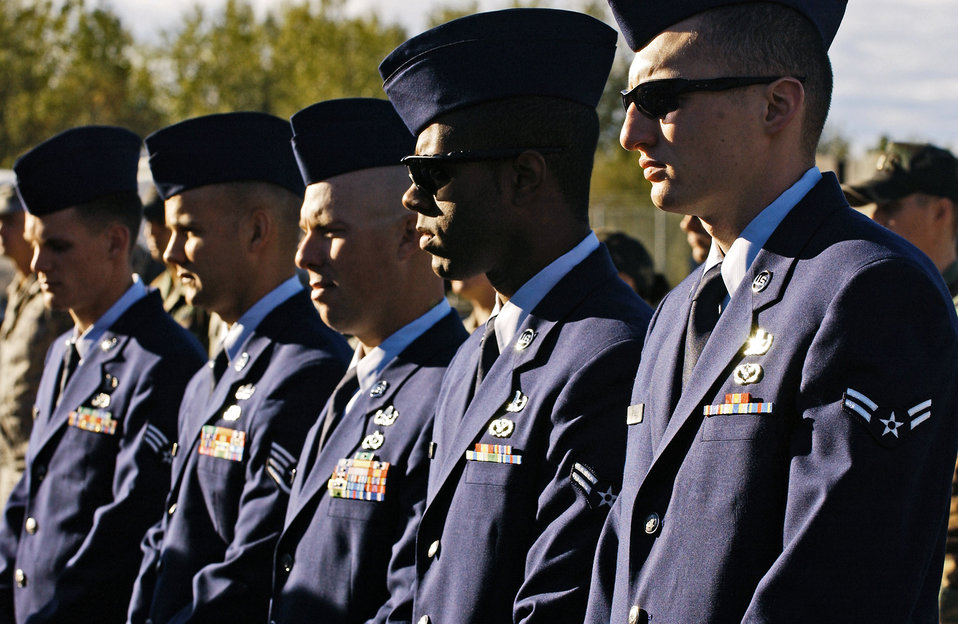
Fallen EOD Airman dedication ceremony

Fellow Airmen of the 354th Civil Engineer Squadron explosive ordnance disposal flight pay their respects during Master Sgt. Brad Clemmon's memorial dedication ceremony Aug. 21, 2008, at Eielson Air Force Base, Alaska. Sergeant Clemmon's family, friends and co-workers attended the building dedication ceremony to honor his ultimate sacrifice.